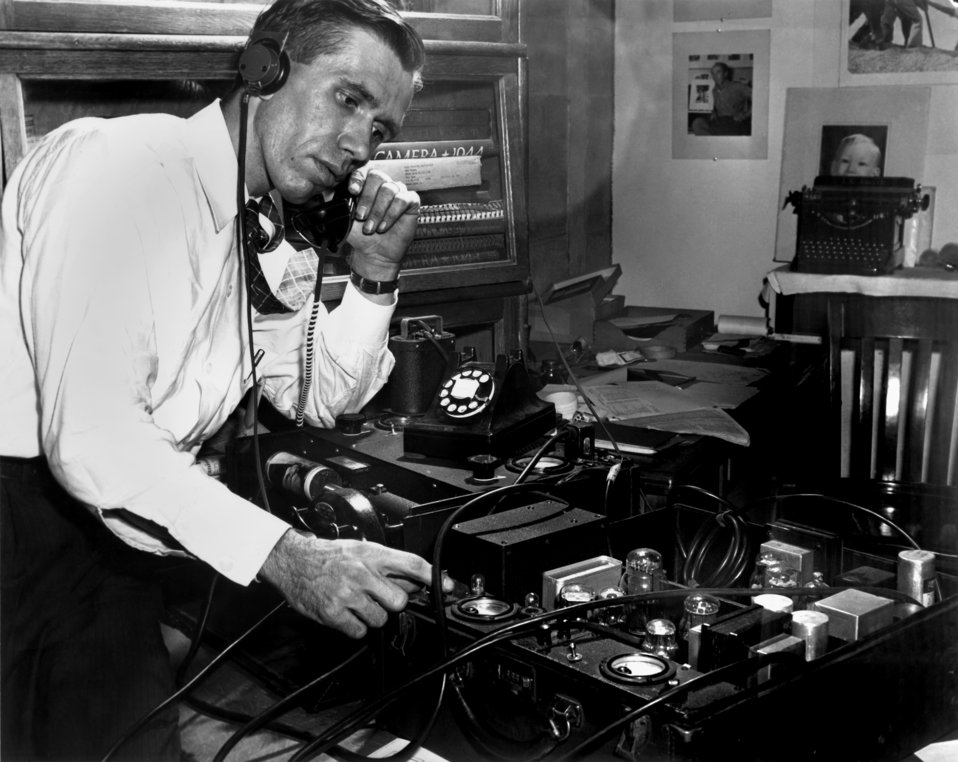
Cart Associated Press Oak Ridge

1149 DOE photo by Ed Westcott

Cart Associated Press Oak Ridge Tennessee 9/29/45